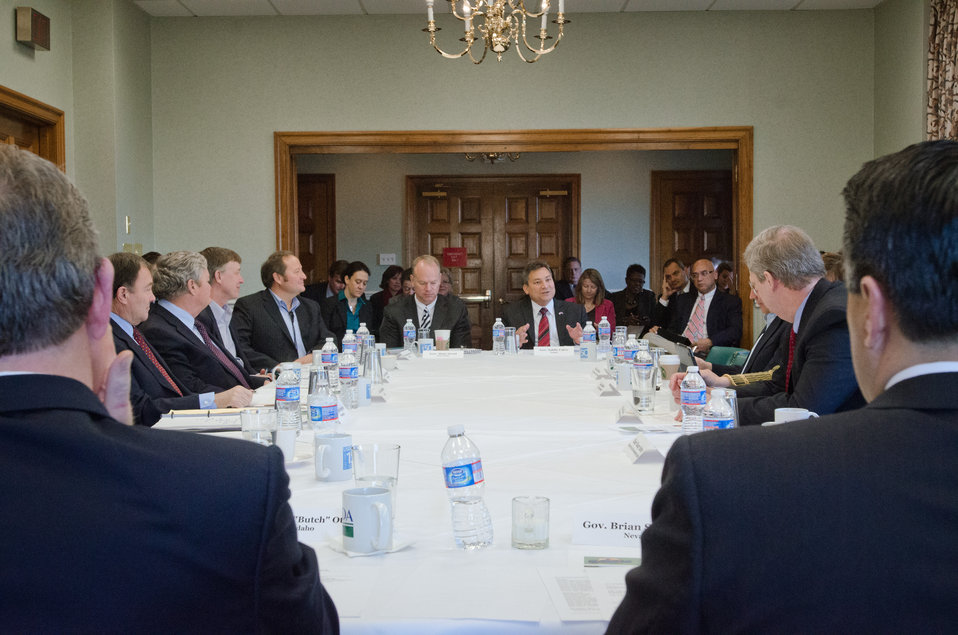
Seen over the shoulders of Idaho - Governor C.L. “Butch” Otter (left) and Nevada - Governor Brian Sandoval (right); Guam - Governor Eddie Calvo presents issues that are important his territory, to Agriculture Secretary Tom Vilsack, Interior Secretary Ken Salazar, Environmental Protection Agency Administrator Lisa Jackson, and Council on Environmental Quality Chair Nancy Sutley, who are in the Lincoln Room, of the United States Department of Agriculture headquarters, in Washington, D.C., on Sunday, February 26, 2012.